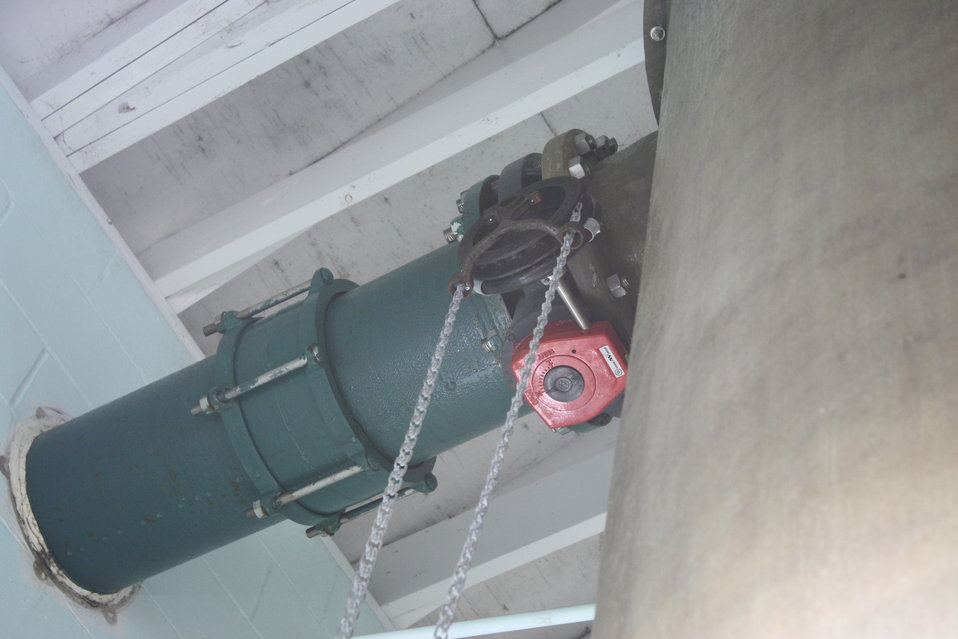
Nashua National Fish Hatchery welcomes regional office employees

Viewing the pump house water filtration system.